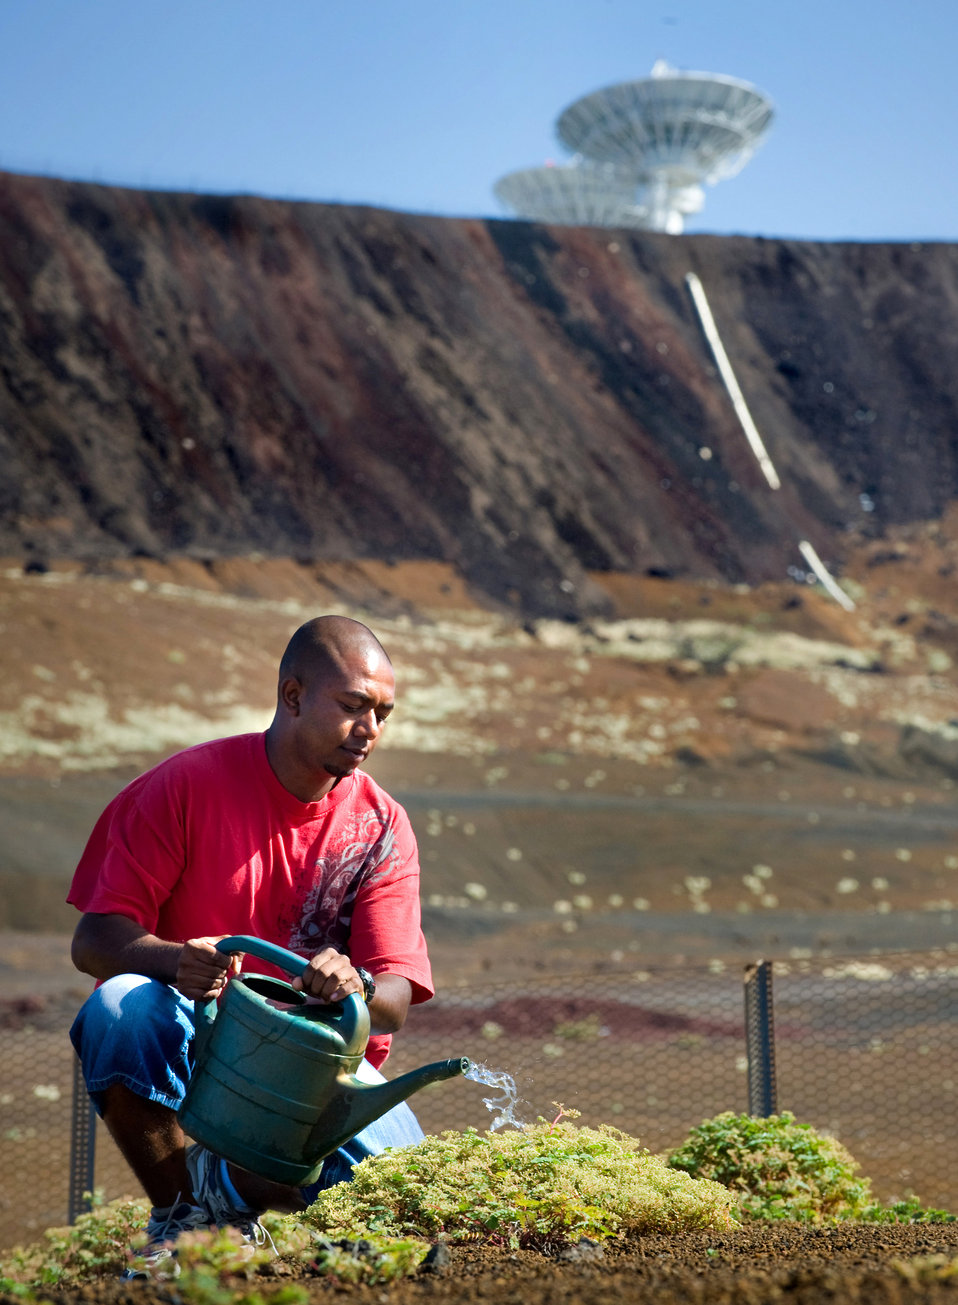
Robert's Plants

Robert Yon takes a break from a busy day to hand water some Ascension Spurge (E. origanoides), an endangered species of plant found only on the Ascension Island, predominantly on the property used by the 45th Operations Group, Detachment 2, Ascension Auxiliary Airfield (AAF), in the South Atlantic Ocean. Mr. Yon a certified environmental technician works with 13 protocols of engineering and the environment. Some of those are hazardous waste and PCB protocols. The small plot of land he cultivates supports seed collection by a British conservation organization on the island. Although, all U.S. Air Force bases have environmental programs, this small remote island environment allows easy observation of the efforts supporting the endangered spurge plant and self-sufficient water, power and waste programs.